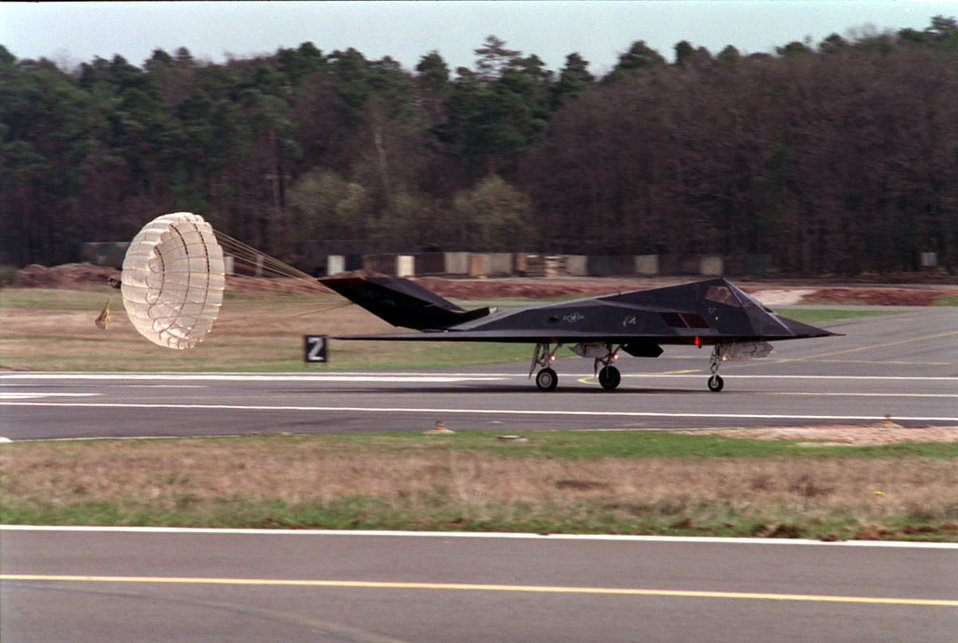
Chutes away

SPANGDAHLEM AIR BASE, Germany -- An F-117 deploys its drag chute on landing here, April 4. William S. Cohen, secretary of defense, ordered additional F-117s to boost NATO air power over the Federal Republic of Yugoslavia.